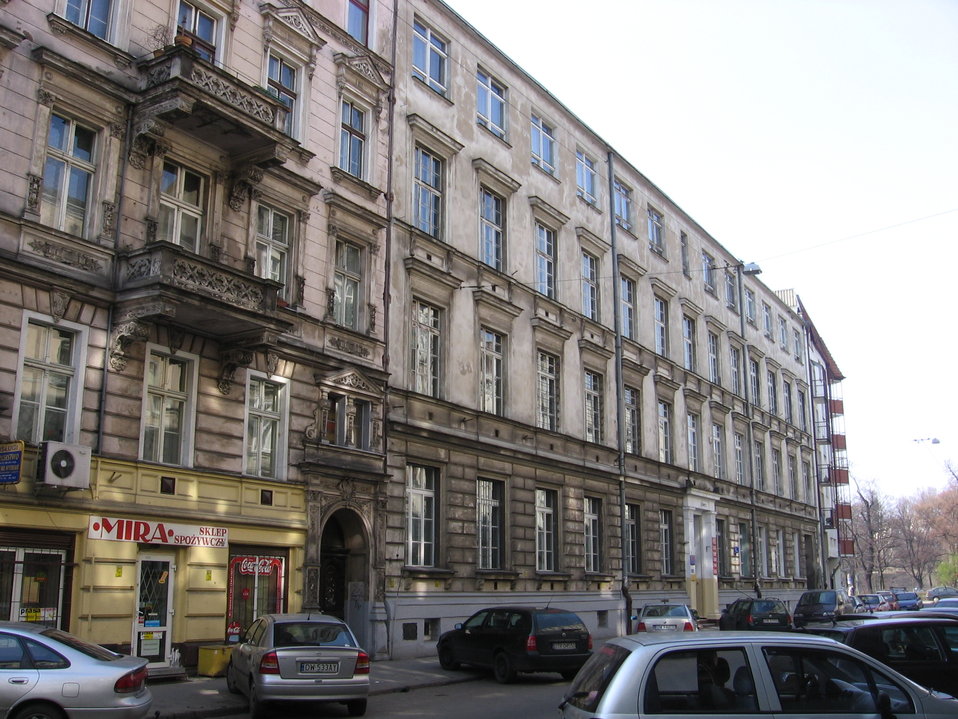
C. J. Ch. Zimmermann, former St. John's Secondary School in Wroclaw, Worcella St. 3, built 1865. Neorenaissance. In 20th century extended with 4th story.